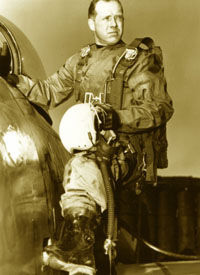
51st Fighter Wing Aces

Col. Robert P. Baldwin became the 12th ace of the wing on June 22, 1953. He was Deputy Commander, 51st Fighter-Interceptor Wing.